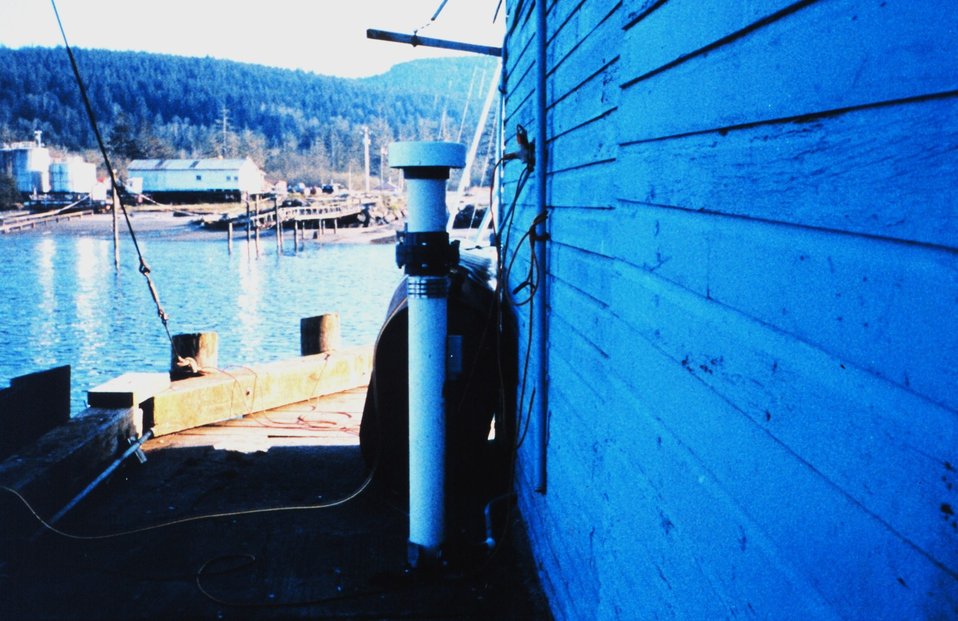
The tide gage installation on the Northwest Seafoods Company Pier.